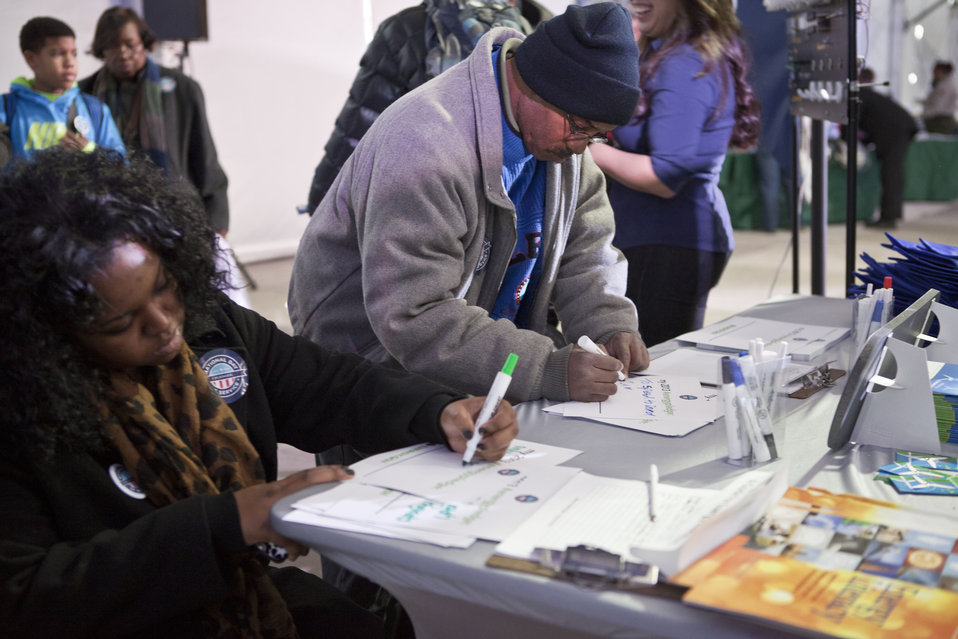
What's your #energypledge?